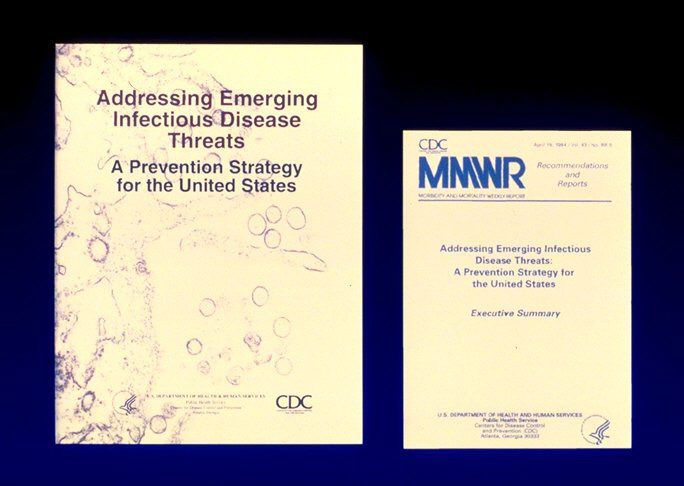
Addressing Emerging Infectious Disease Threats: A Prevention Strategy for the United States (photos)